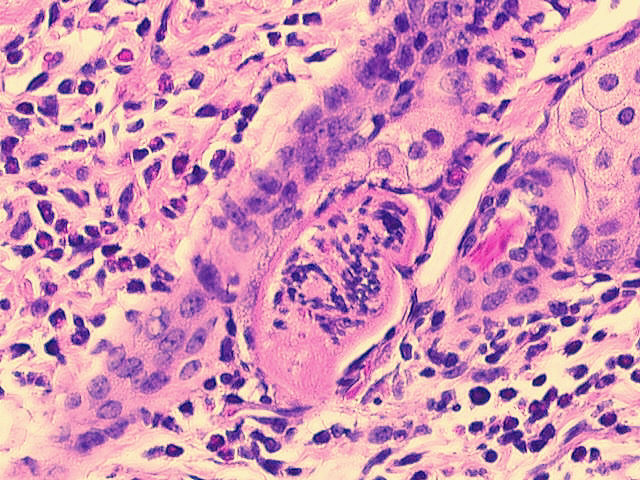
Schistosomulum in abdominal skin hair follicle of a vaccinated mouse.